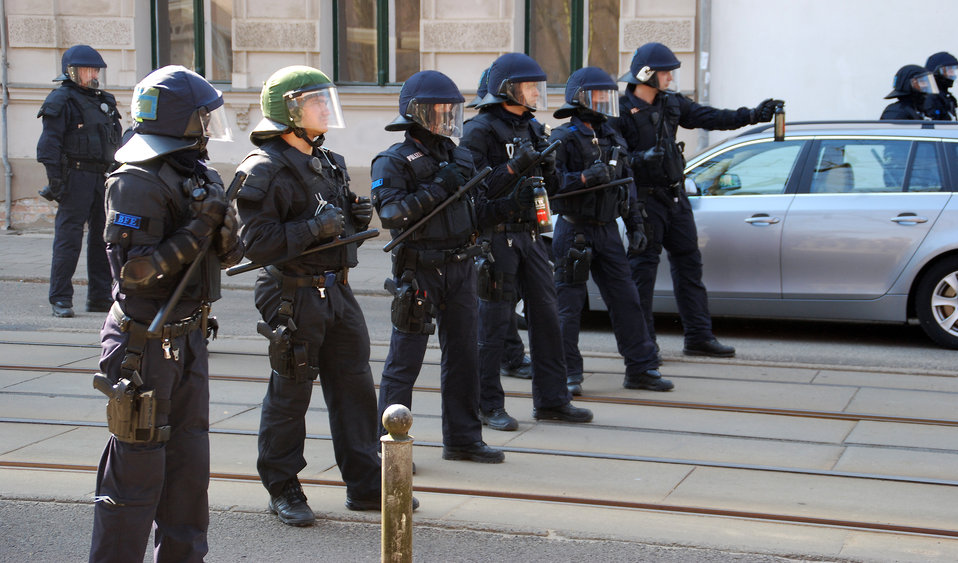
Proteste gegen den Nazi-Aufmarsch am 24.3.2012 in Frankfurt (Oder)